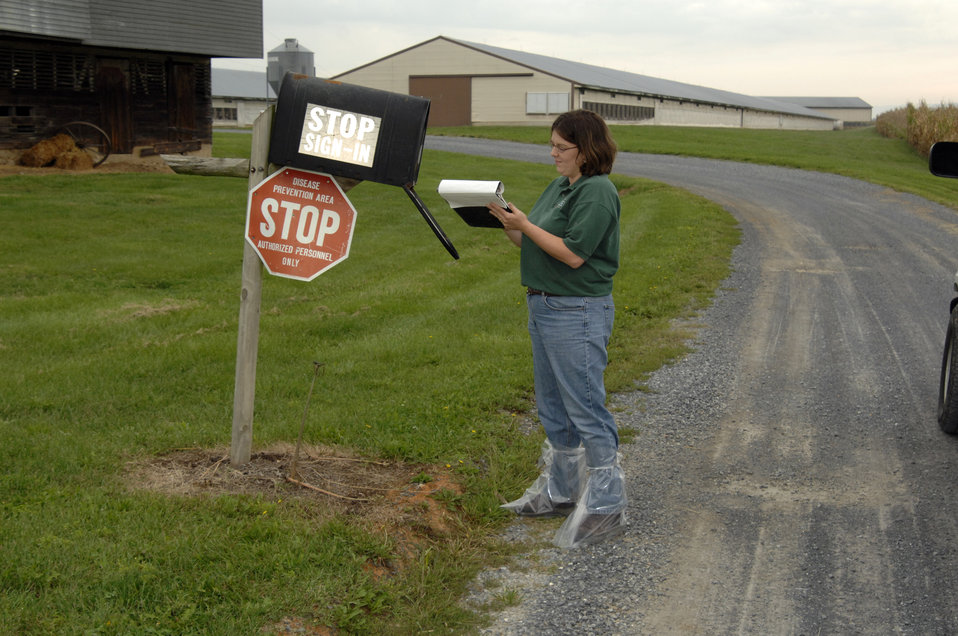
A U.S. Department of Agriculture (USDA) inspector takes necessary precautions to prevent the spread of any diseases between poultry farms in Rockingham County, Virginia on September 8, 2008.